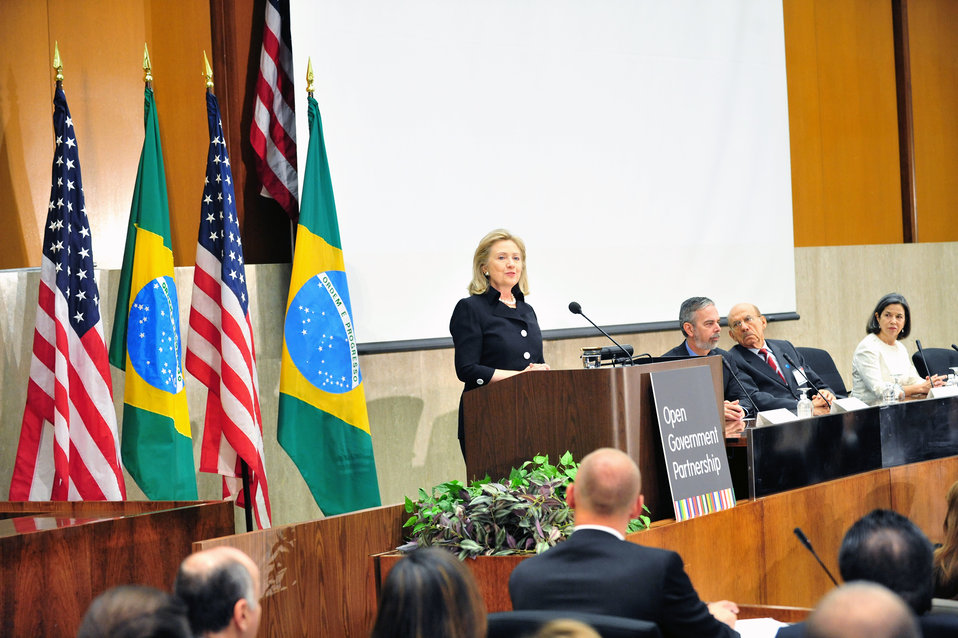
Secretary Clinton Delivers Remarks at Open Government Partnership High-Level Meeting

U.S. Secretary of State Hillary Rodham Clinton delivers remarks at the Open Government Partnership High-Level Meeting, at the U.S. Department of State in Washington, D.C., on July 12, 2011.